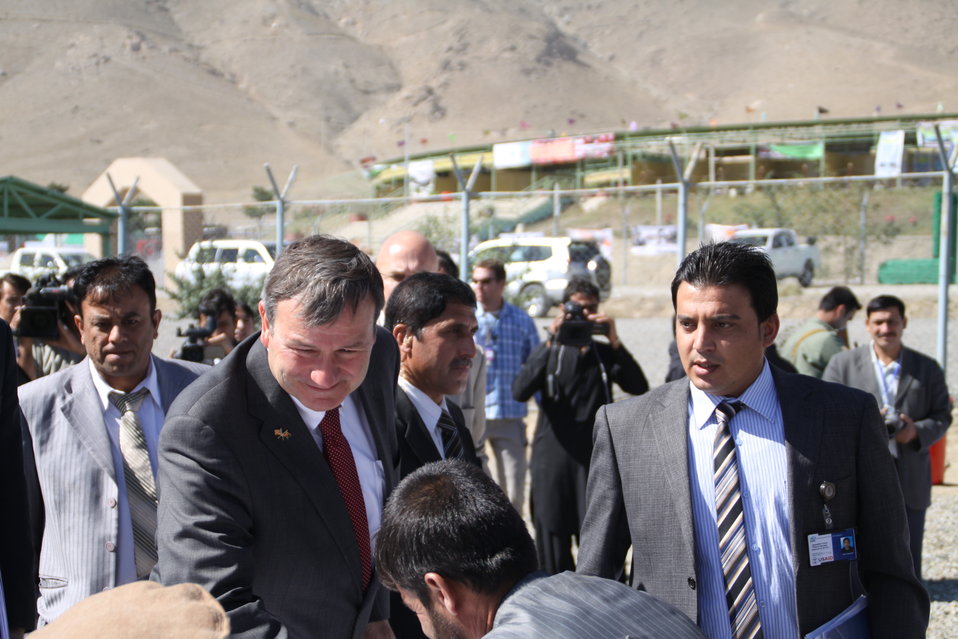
AVIPA Plus Wheat Seed Distribution 101005

US Ambassador Karl Eikenberry and USAID Acting Mission Director Kevin Brownawell joined the Minister of Agriculture, Irrigation and Livestock, H.E. Minister Mohammed Rahimi in signing a Memorandum of Understanding and distributing vouchers to area farmers for wheat and fertilizer.

US Ambassador Karl Eikenberry and USAID Acting Mission Director Kevin Brownawell joined the Minister of Agriculture, Irrigation and Livestock, H.E. Minister Mohammed Rahimi in signing a Memorandum of Understanding and distributing vouchers to area farmers for wheat and fertilizer.